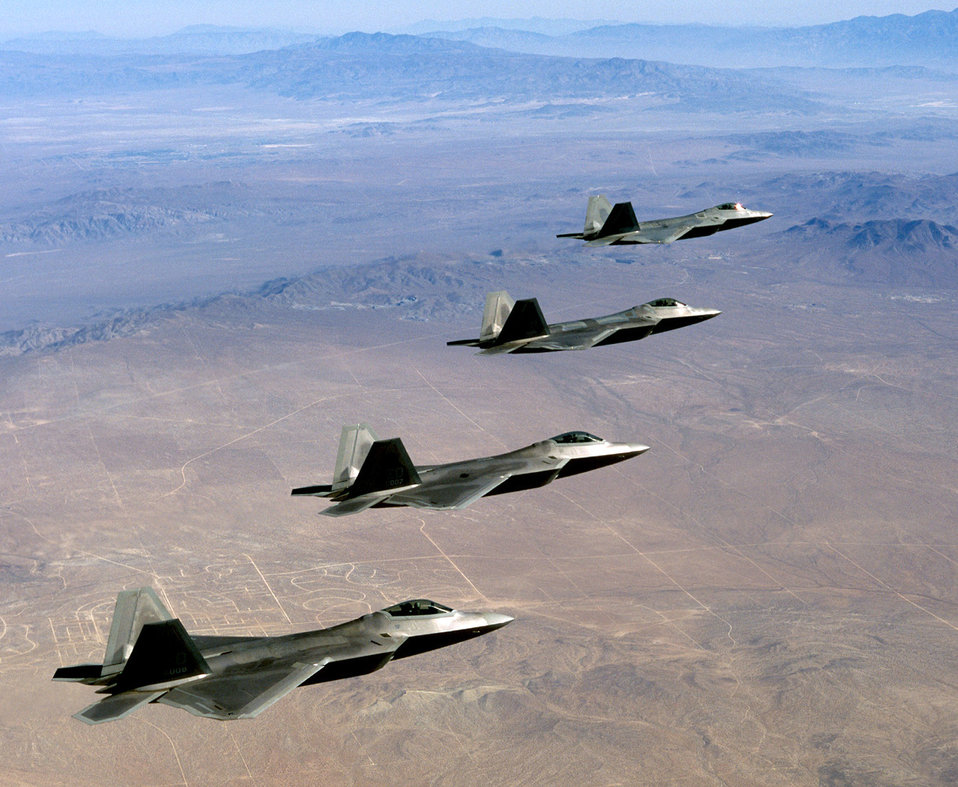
Raptors as far as the eye can see

EDWARDS AIR FORCE BASE, Calif. -- Four F/A-22 Raptors fly over the Mojave Desert during a landmark test mission. A record number of seven Raptors were airborne simultaneously during several test missions Aug. 29